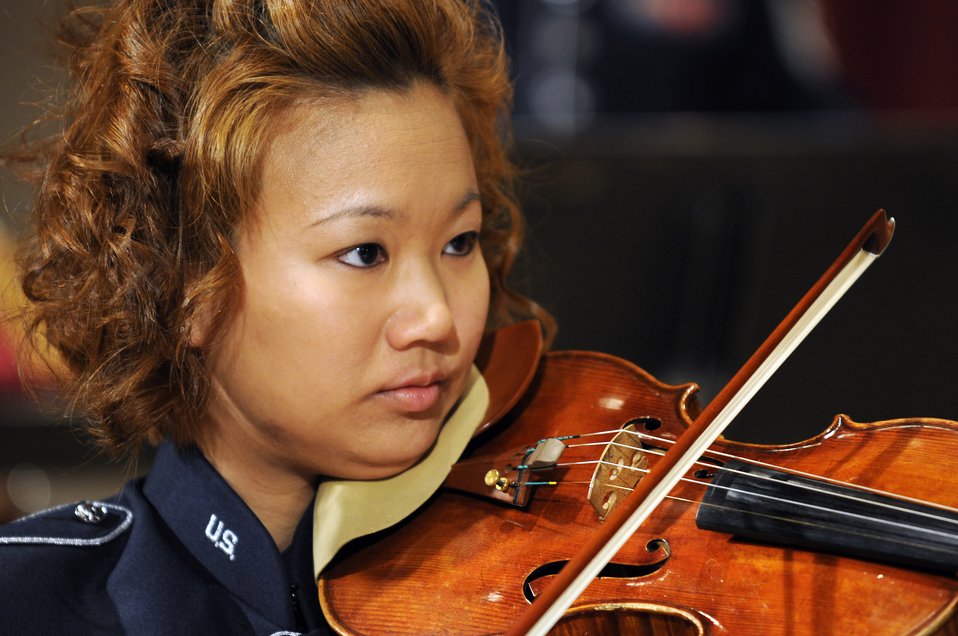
The sound of freedom

Tech. Sgt. Ni Santiago, a violinist with the U.S. Air Force Band, participates in a recording session Dec. 15 at Bolling Air Force Base, D.C. The band's rendition of the national anthem will be played at base movie theaters throughout the region.